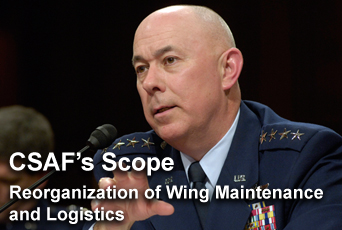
CSAF's Scope

The CSAF's Scope focuses on current topics the Air Force chief of staff feels are of special importance to today's Airmen.